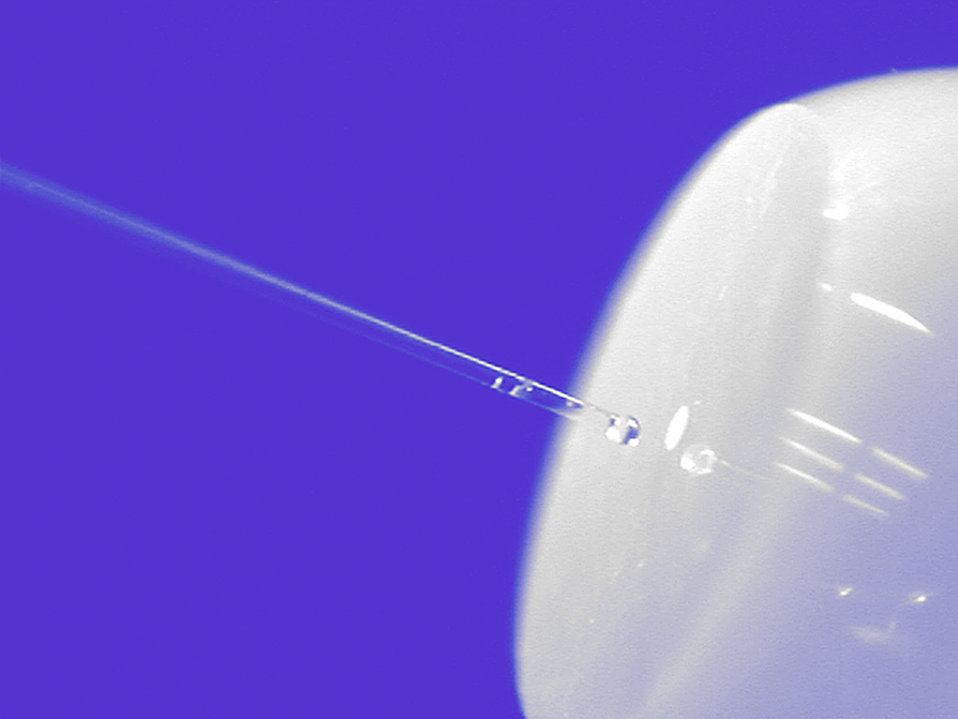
Precision Engineering Metrology of Small Holes

NIST researchers and collaborators have developed a new method for measuring the interior dimensions of small holes with an uncertainty of only 35 nanometers. Here, a glass probe is inserted into an optical 'ferrule,' a device for connecting optical fibers used in communications systems.